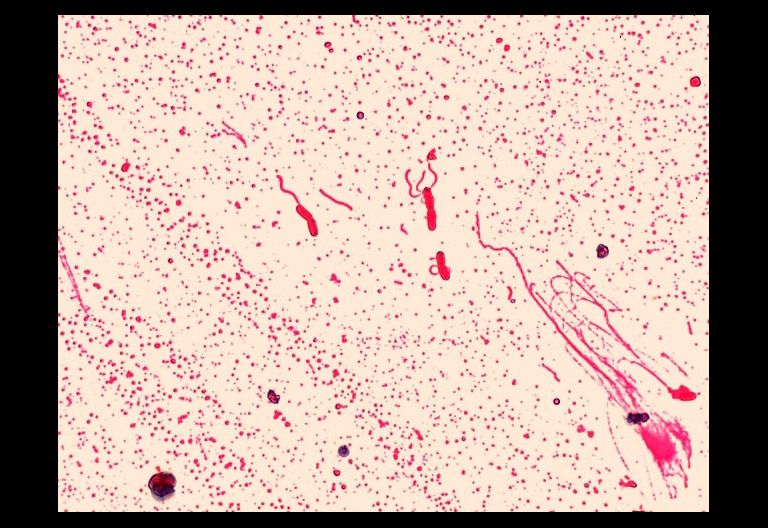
Bacillus firmus. Leifson flagella stain.